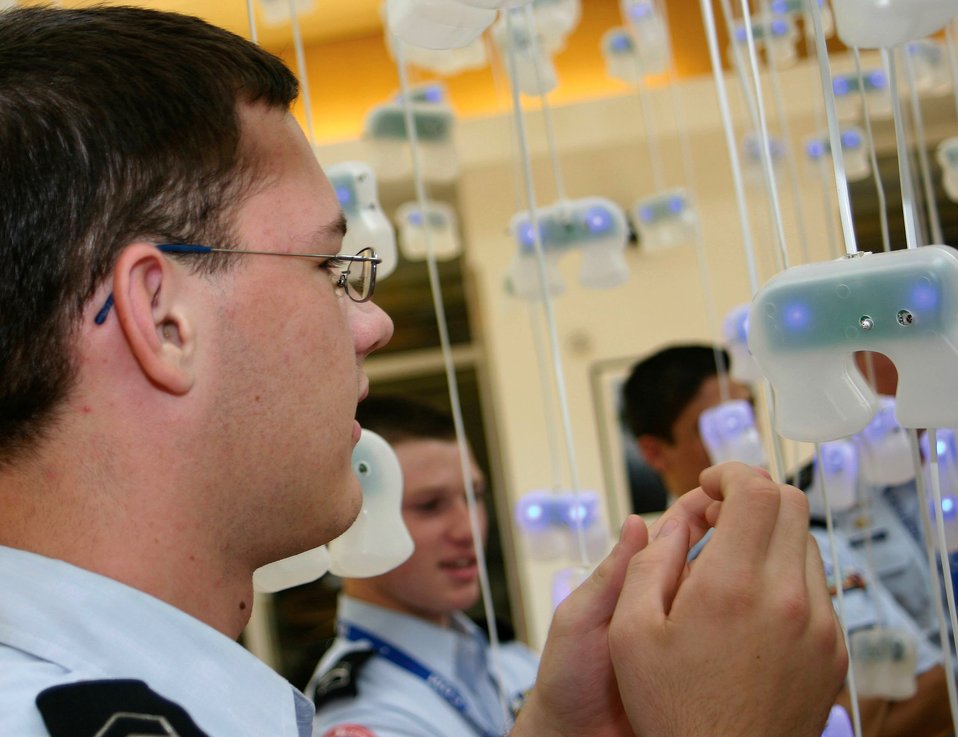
Junior ROTC cadets explore Air Force careers

Air Force Junior ROTC Cadet Kevin Ives looks at robotic sensors July 13 developed by engineers at the Stephenson Research and Technology Center at the University of Oklahoma in Norman, Okla. Cadets from Junior ROTC units worldwide visited the research center and other science and technology centers as part of the 2007 Air Force Junior ROTC Aerospace and Technology Honor Camps. Approximately 450 cadets attended one of eight camps this year in New Mexico and Oklahoma. Currently, there are more than 100,000 cadets in the Air Force Junior ROTC program worldwide.